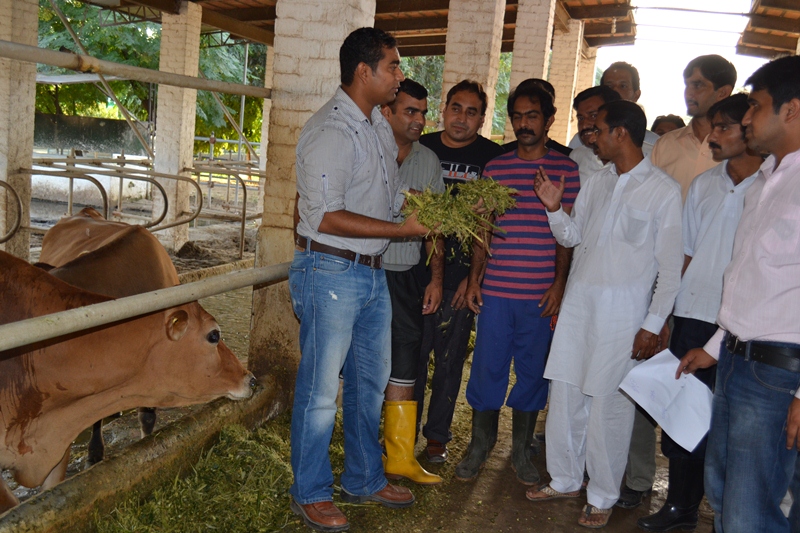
3 - First batch of Dairy Project farm manager trainees attending Farm Managers Training by USAId Dairy Project